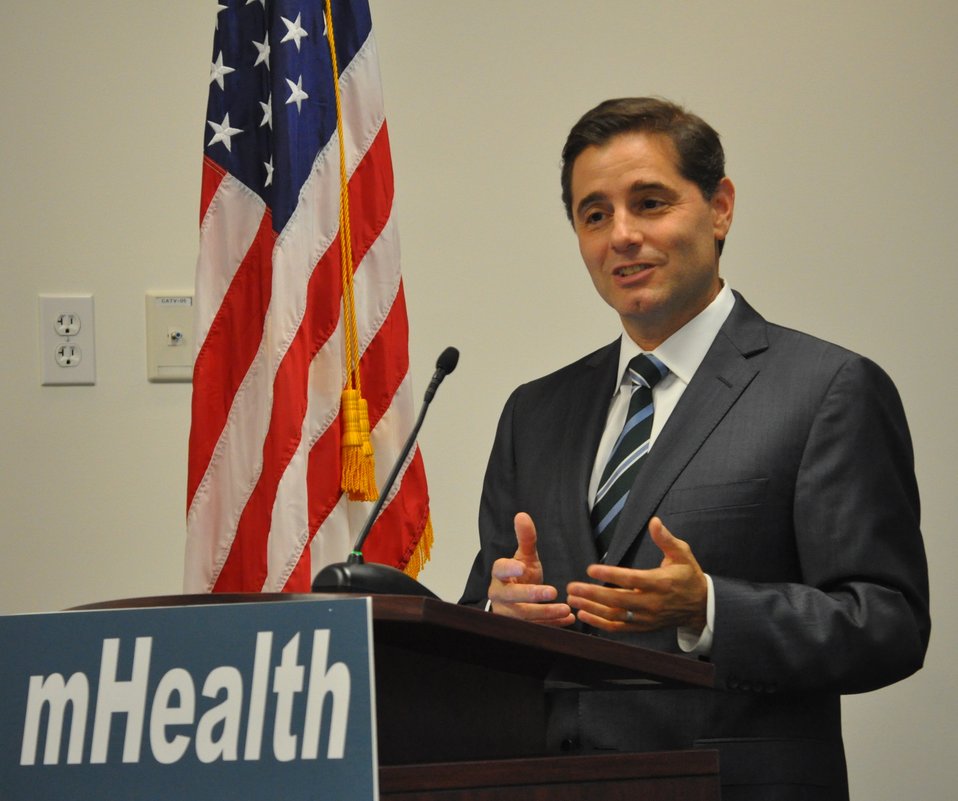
mHealth Task Force Findings and Recommendations Event - DSC 0663